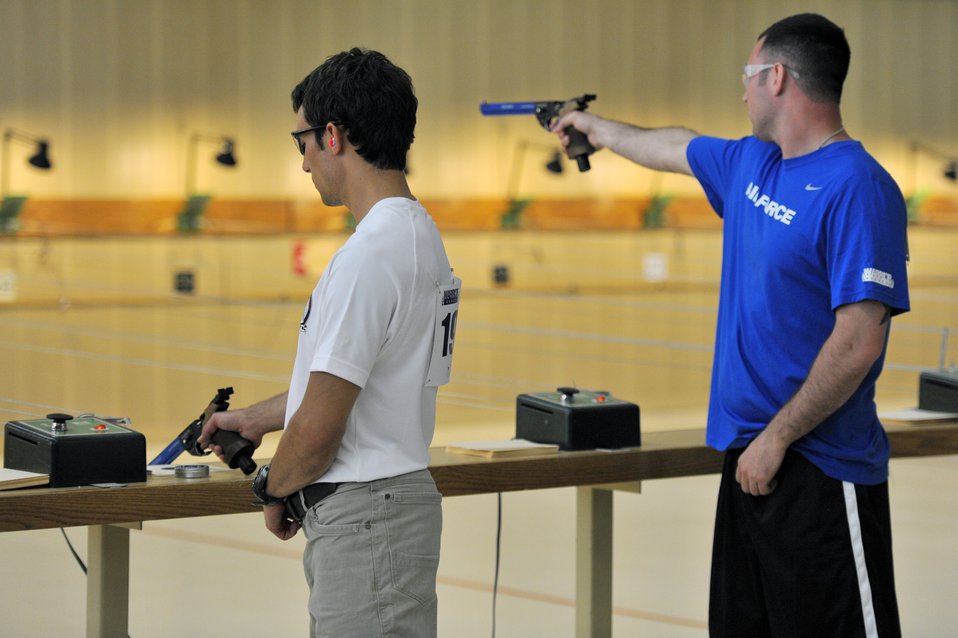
prelims shooting competition

Marc Esposito and Christopher E. D'Angelo take aim in the shooting competition of the 2011 Warrior Games May 17, 2011, at the U.S. Olympic Training Center in Colorado Springs, Colo. More than 200 wounded warriors from all the military services are competing in Paralympic-style athletic events May 16 through 21.